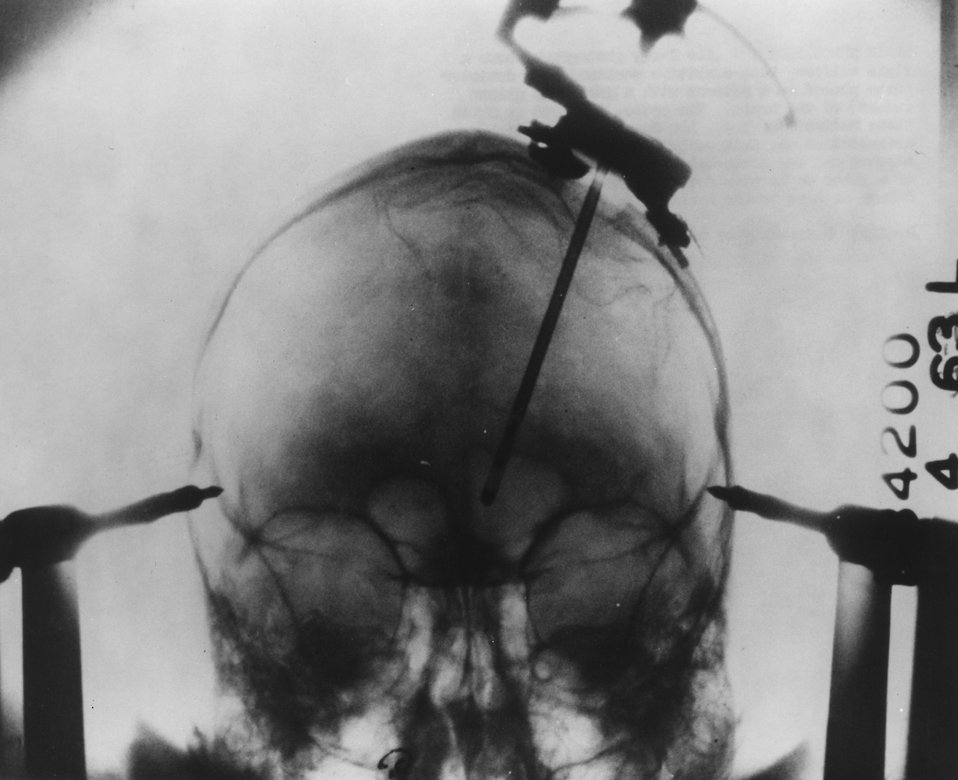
Brain Tumor Probe...The X-ray photograph shows a rigid silicon, beta-sensitive semiconductor detector probe placed in a patient with a malignant glioma (tumor) of the brain. Circa 1970.